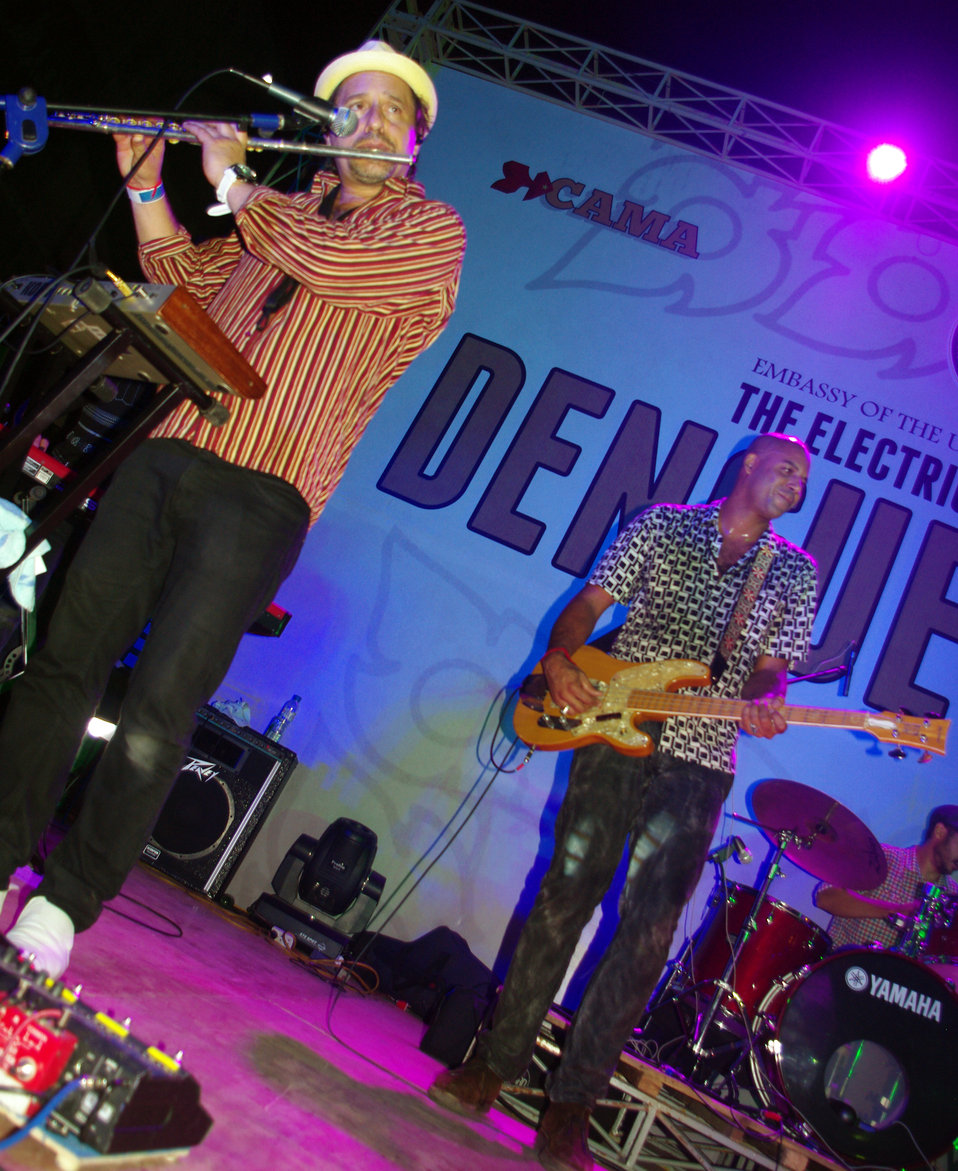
PEPFAR, U.S. Embassy Host Dengue Fever Concert in Hanoi